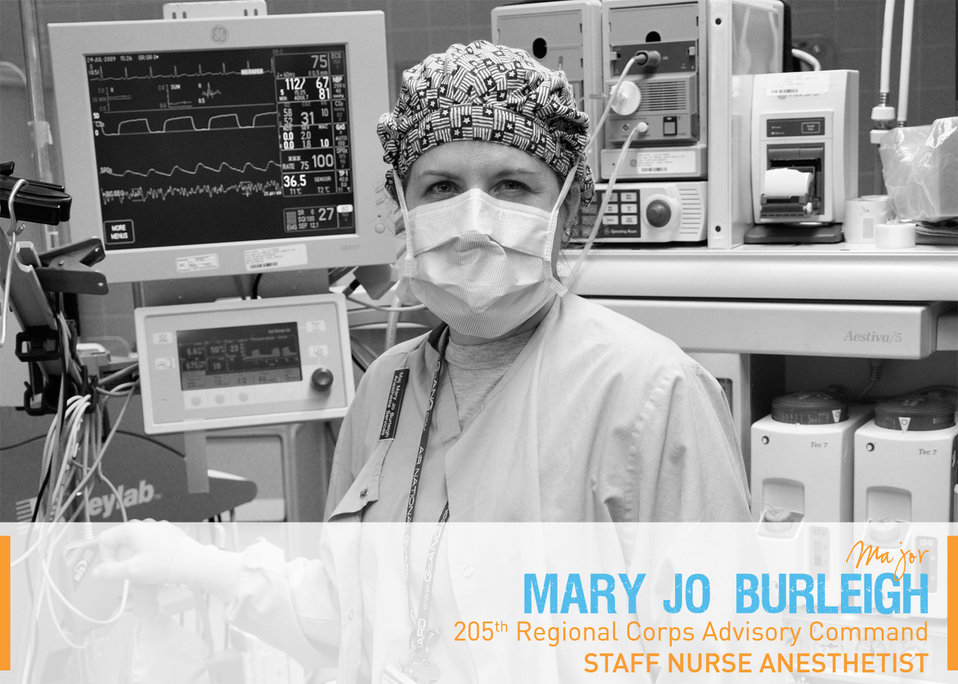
Portraits in Courage Vol 4: Maj. Mary Jo Burleigh, staff nurse anesthetist, 205th Regional Corps Advisory Command and assigned to Langley Air Force Base, Va. She saved the live of a severely wounded Afghan interpreter that every one else had given up for dead.